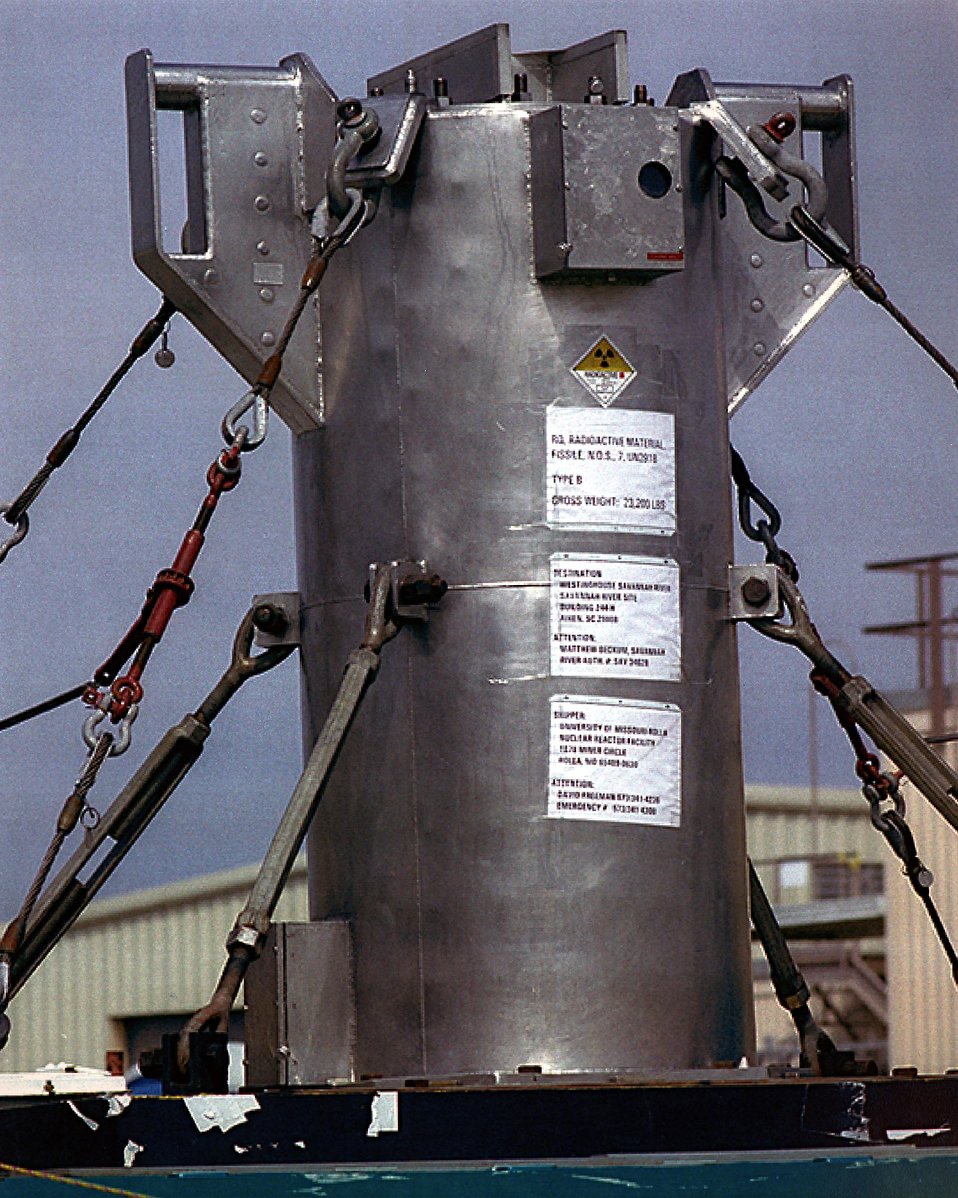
SPENT FUEL BEING TRANSPORTED IN CASK ON RAILROAD CAR, SAVANNAH RIVER SITE.